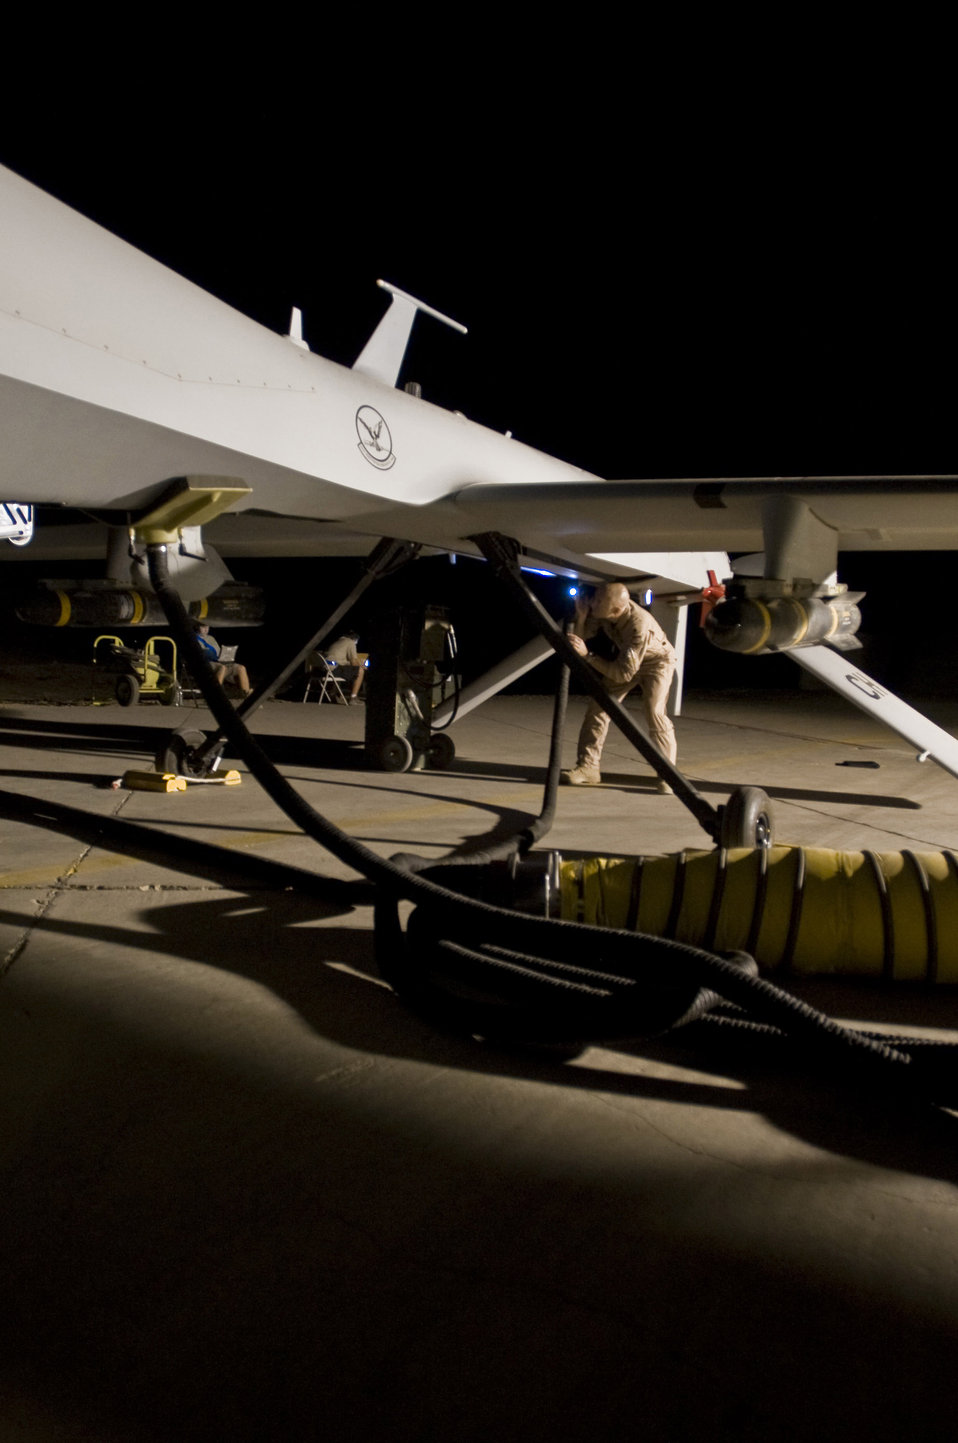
Predator preparations

Lt. Col. Geoffrey Barnes performs a preflight inspection of an MQ-1 Predator unmanned aircraft system Sept. 3 at Ali Base, Iraq. The Predator is a medium-altitude, long-endurance, remotely piloted aircraft system. Colonel Barnes is commander of the 46th Expeditionary Reconnaissance and Attack Squadron Det. 1, and is deployed from Creech Air Force Base, Nev.